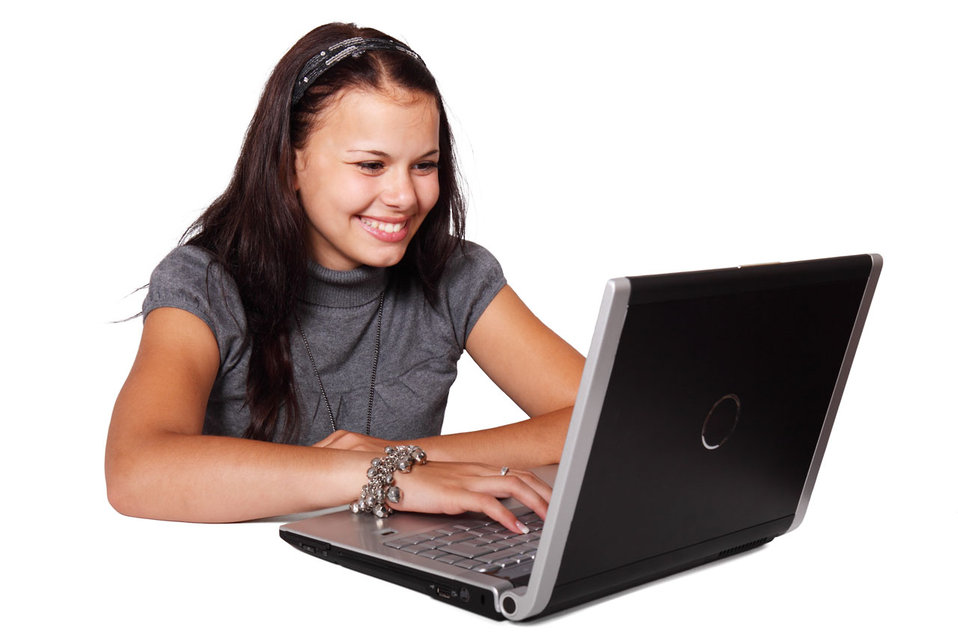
Woman sitting with laptop

Young woman sitting with laptop isolated on white background.